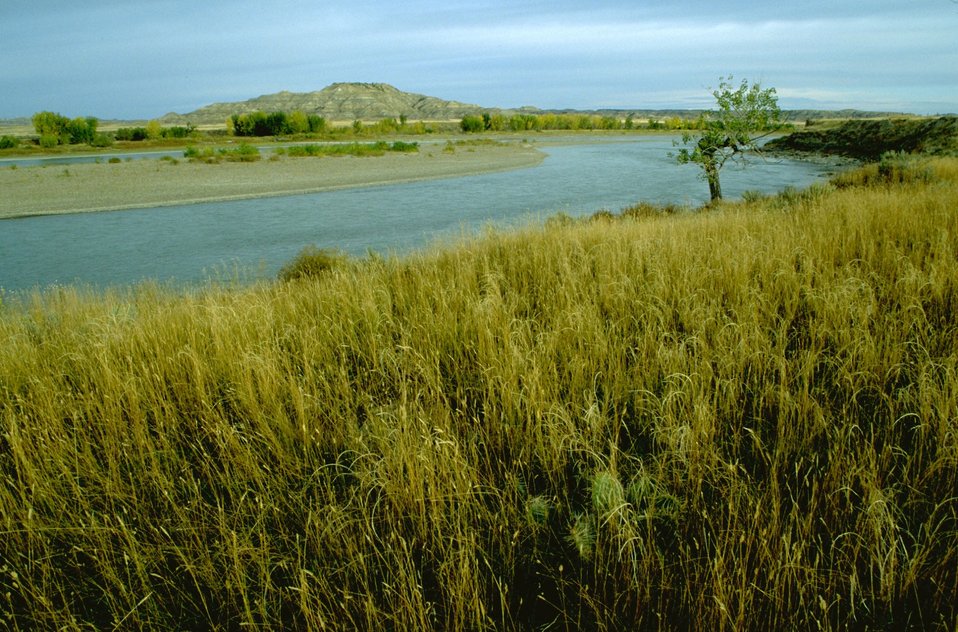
Sheridan Butte along the Yellowstone River